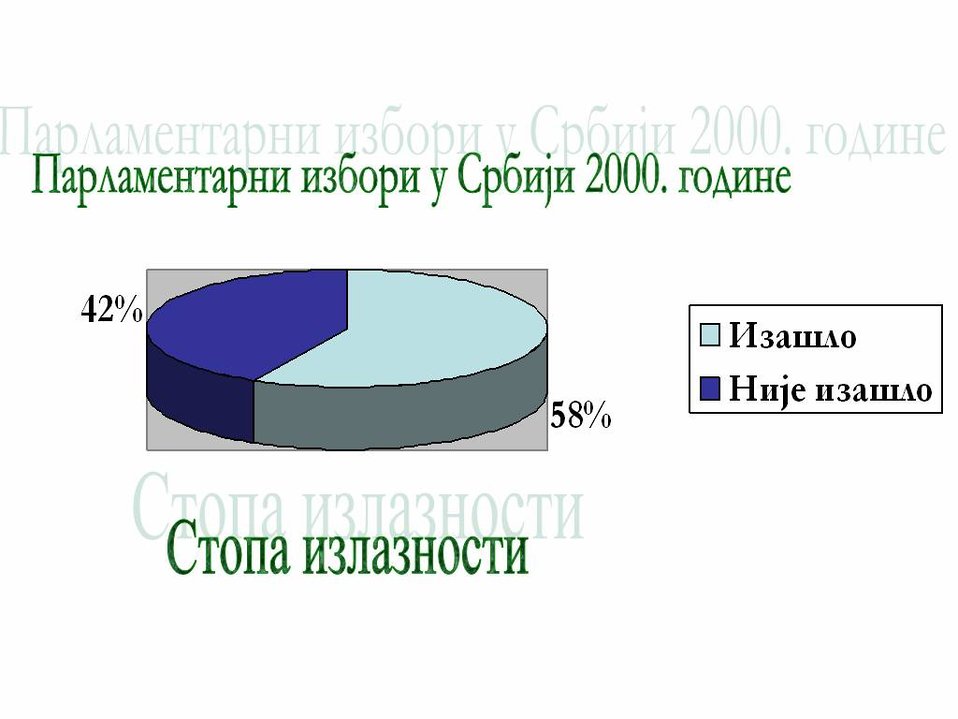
Српски / srpski: Аутор је Видак Раичевић. Приказ стопе излазности бирача на парламентарне изборе у републици Србији 2000. године.